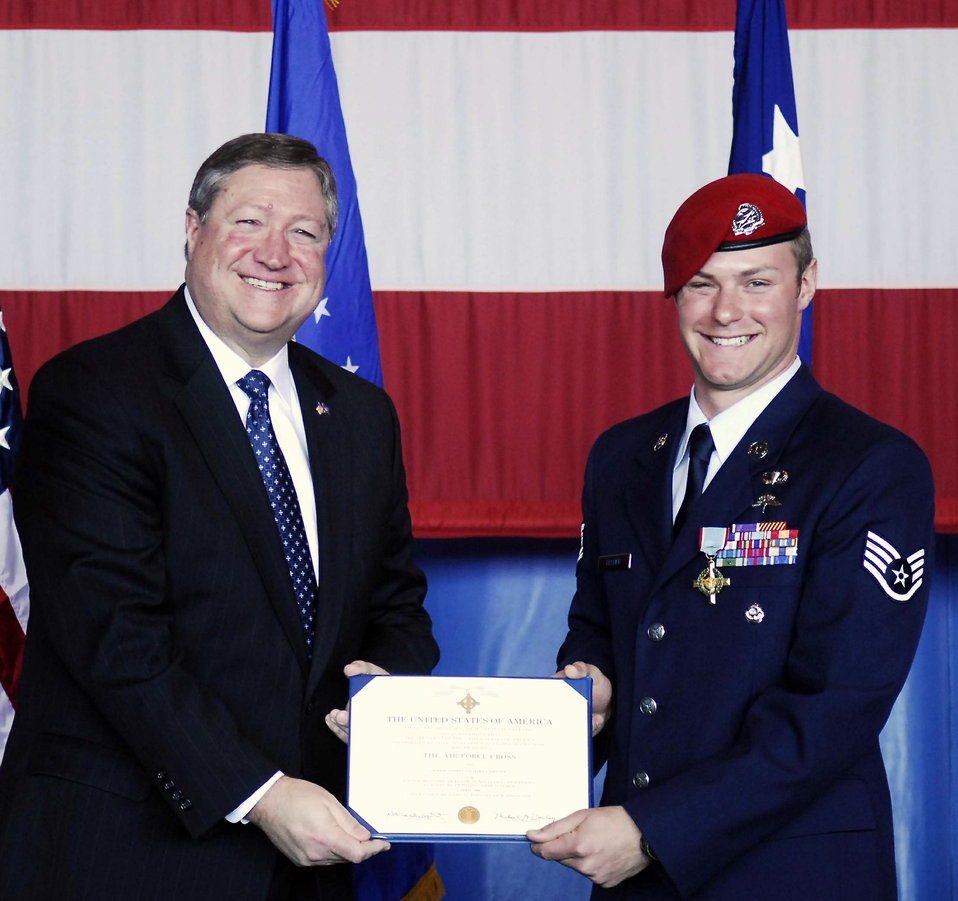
Combat controller receives Air Force Cross, Purple Heart

Secretary of the Air Force Michael B. Donley presents Staff Sgt. Zachary Rhyner the Air Force Cross March 10 at Pope Air Force Base, N.C. Sergeant Rhyner of the 21st Special Tactics Squadron received the medal for uncommon valor during Operation Enduring Freedom for his actions during an intense 6.5-hour battle in Shok Valley, Afghanistan, April 6, 2008.